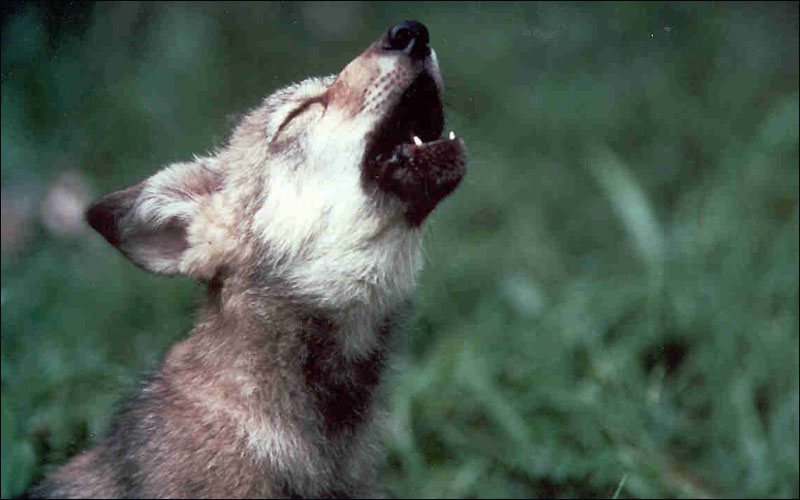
Mexican wolf pup howling